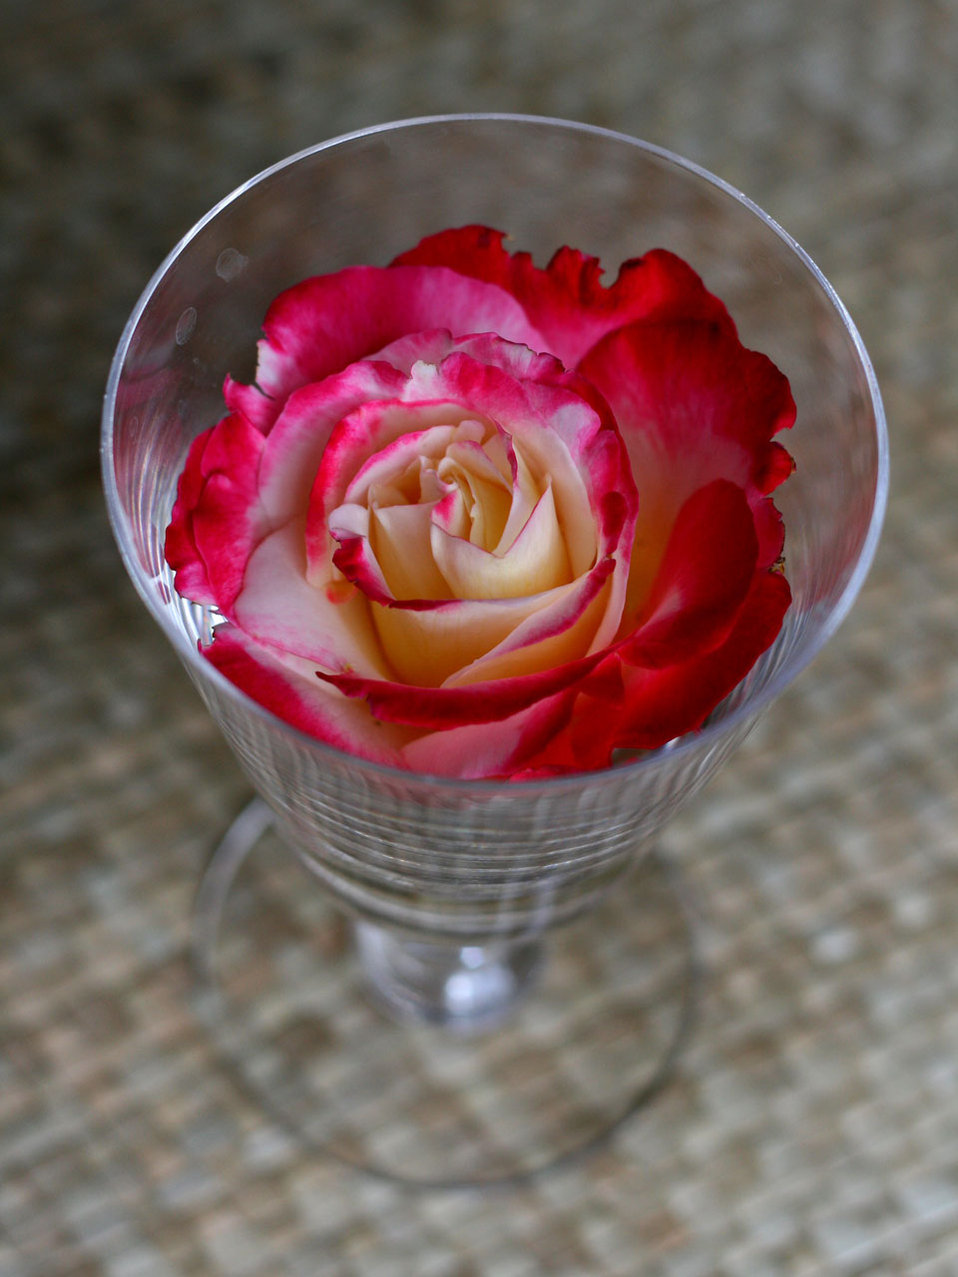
Glass of rosé

A rose bud from our garden, a wine glass from the cupboard, et voila!.